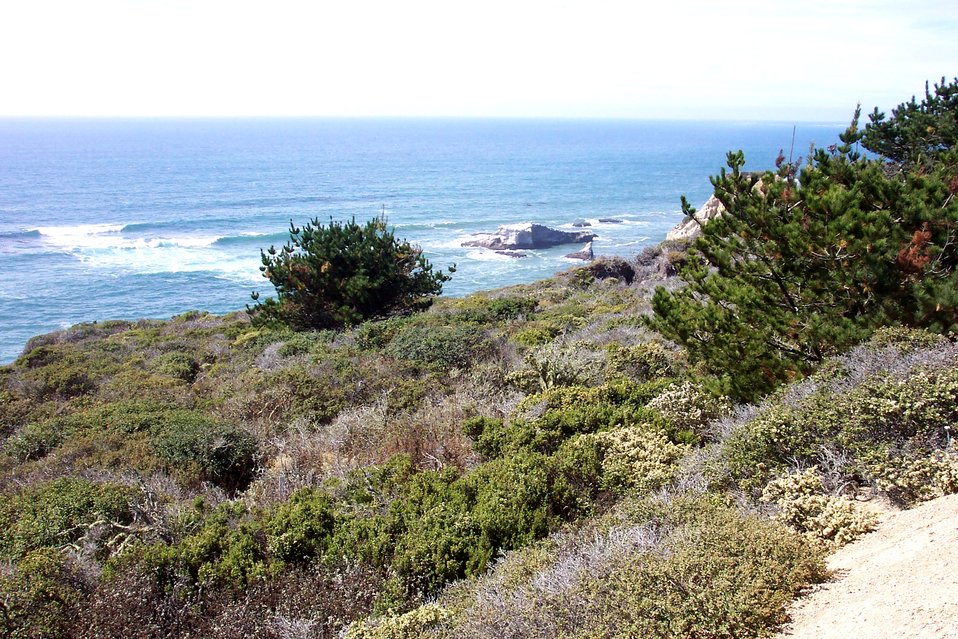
A seaview along the coast near Davenport.